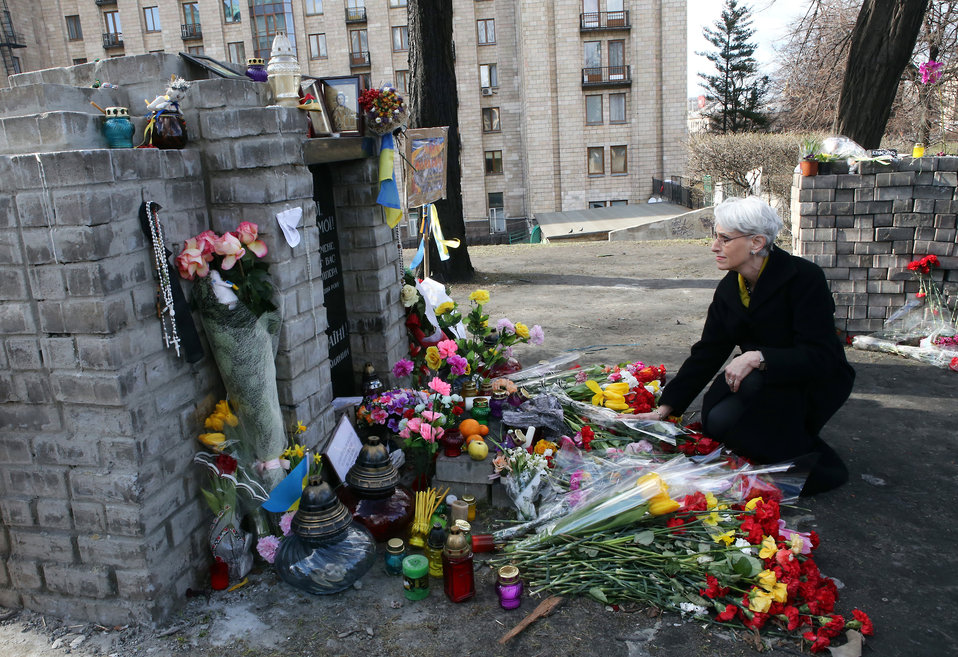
Under Secretary Sherman Visits the Shrine of the Fallen

Under Secretary of State for Political Affairs Wendy Sherman visits the Shrine of the Fallen in Kyiv, Ukraine, on March 20, 2014.